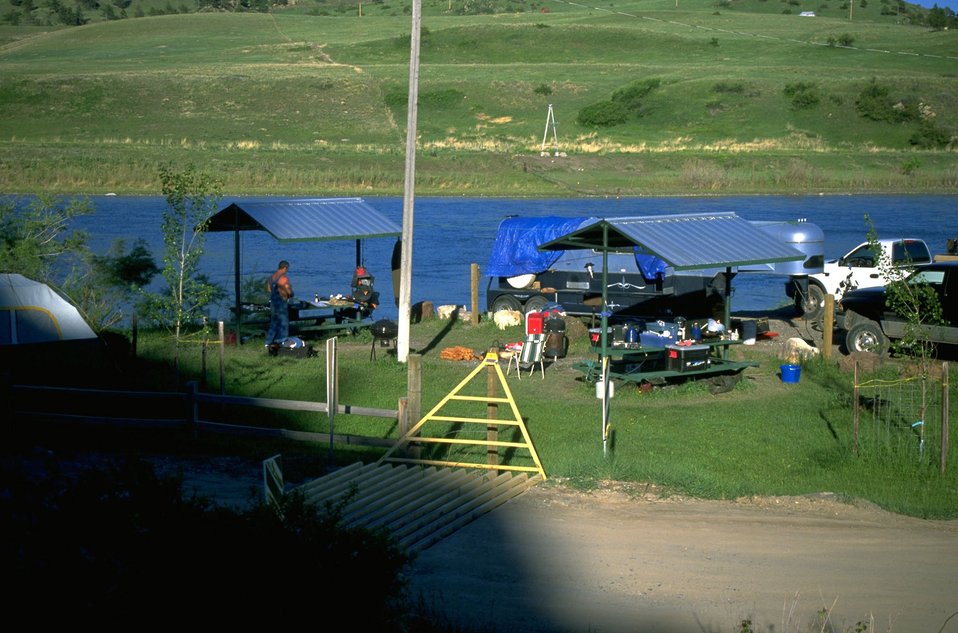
View of Holter Dam Campground from the road